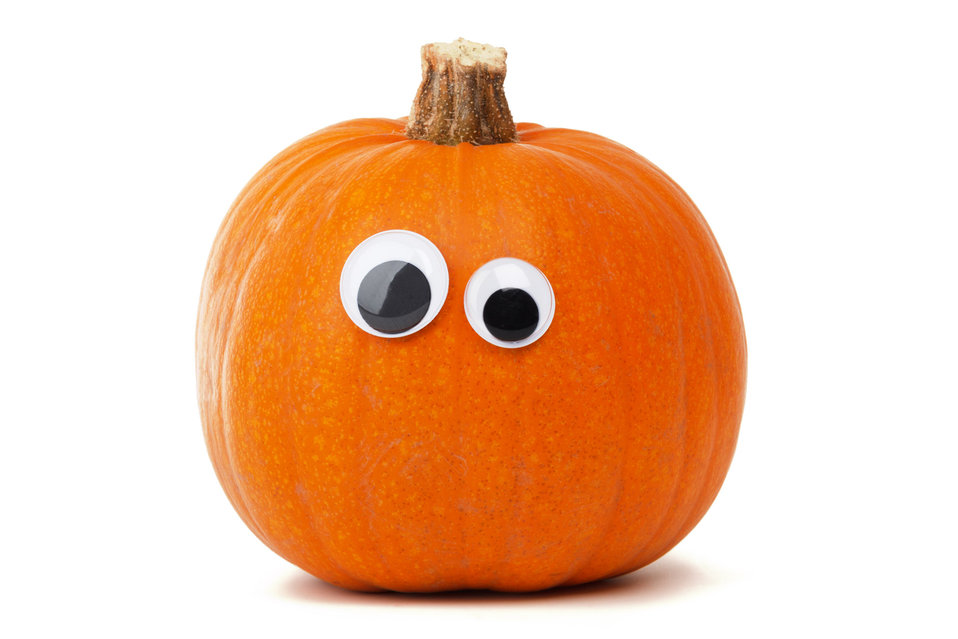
Funny pumpkin face isolated on white background. just add mouths to create various expressions.